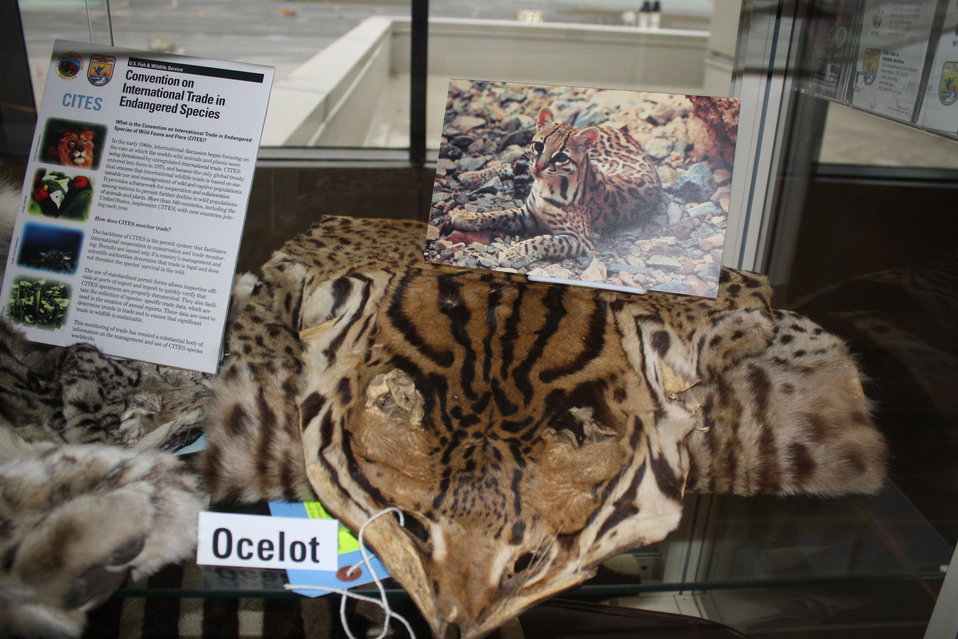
Ocelot Skin and Photo